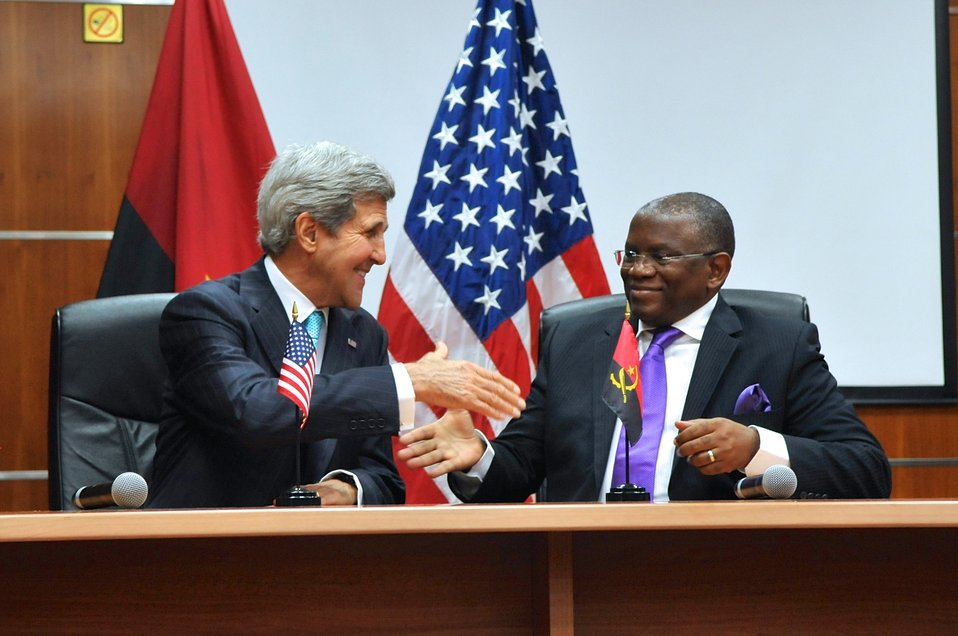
Secretary Kerry, Angolan Foreign Minister Chikoti Shake Hands After Meeting in Luanda

U.S. Secretary of State John Kerry and Angolan Foreign Minister Rebelo Chikoti shake hands after addressing reporters following their bilateral meeting in Luanda on May 5, 2014.